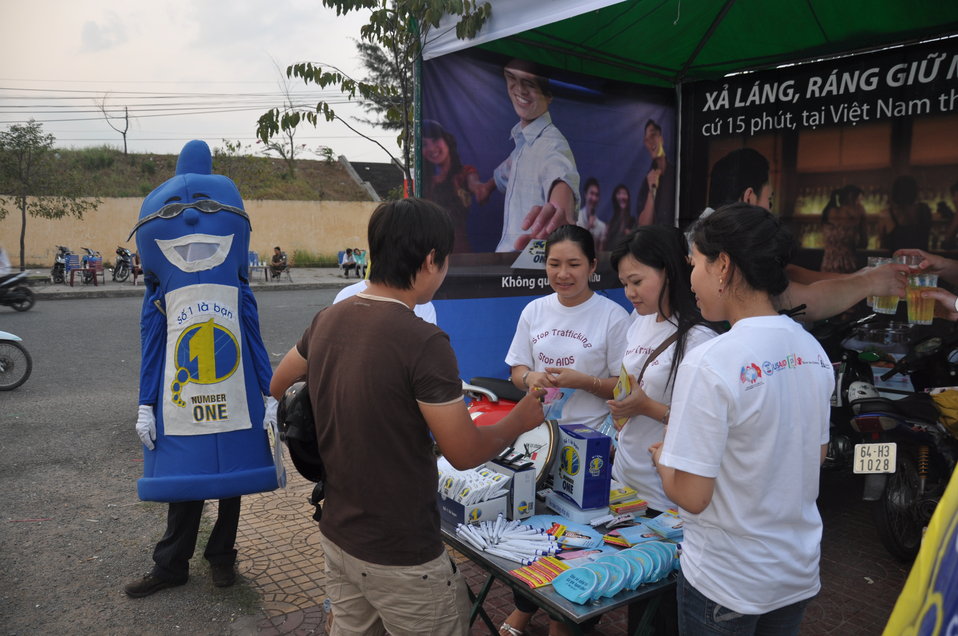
USAID and MTVEXIT concert in Can Tho